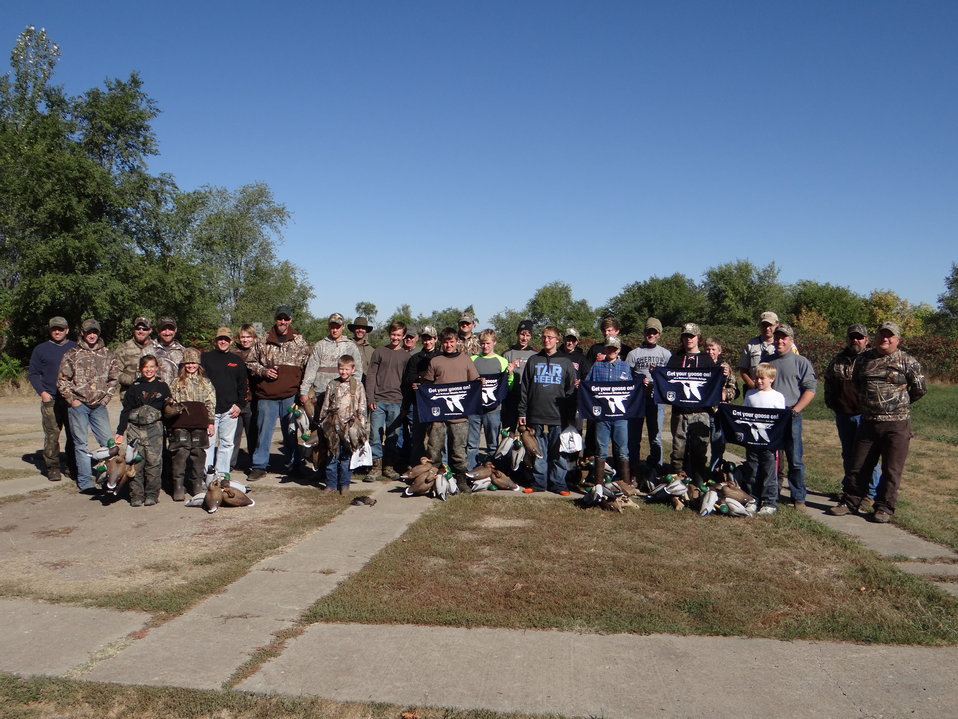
Youth Waterfowl Class 2013

2013 HURON WMD YOUTH WATERFOWL HUNT. Participants and volunteers help on this annual two day training and hunting event. 'Get Your Goose On!' towels photo taken at the end of day one. The Huron Wetland Management District hosted its 10th annual Youth Waterfowl Hunt in September. This event provided 28 youth hunters between the ages of 12 – 15 and (new) mentored hunters (10-11), an opportunity to learn about various migratory birds and their habitats, duck and goose calling, decoys, and waterfowl hunting techniques. This event continues to be a success each year due to the dedicated volunteers within the community of Huron.